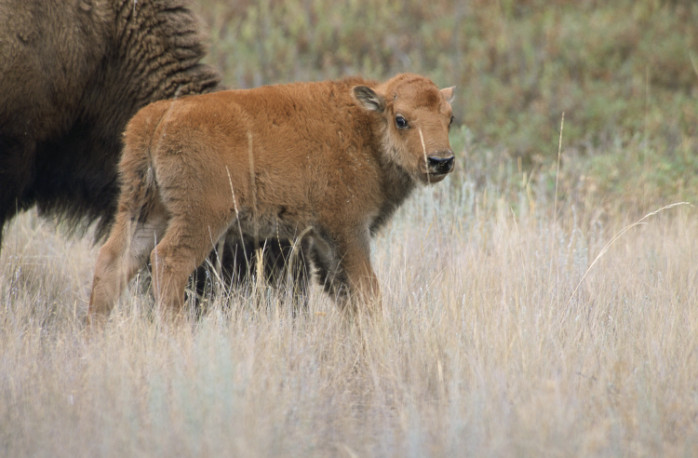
bison calf

National Bison Range, MT